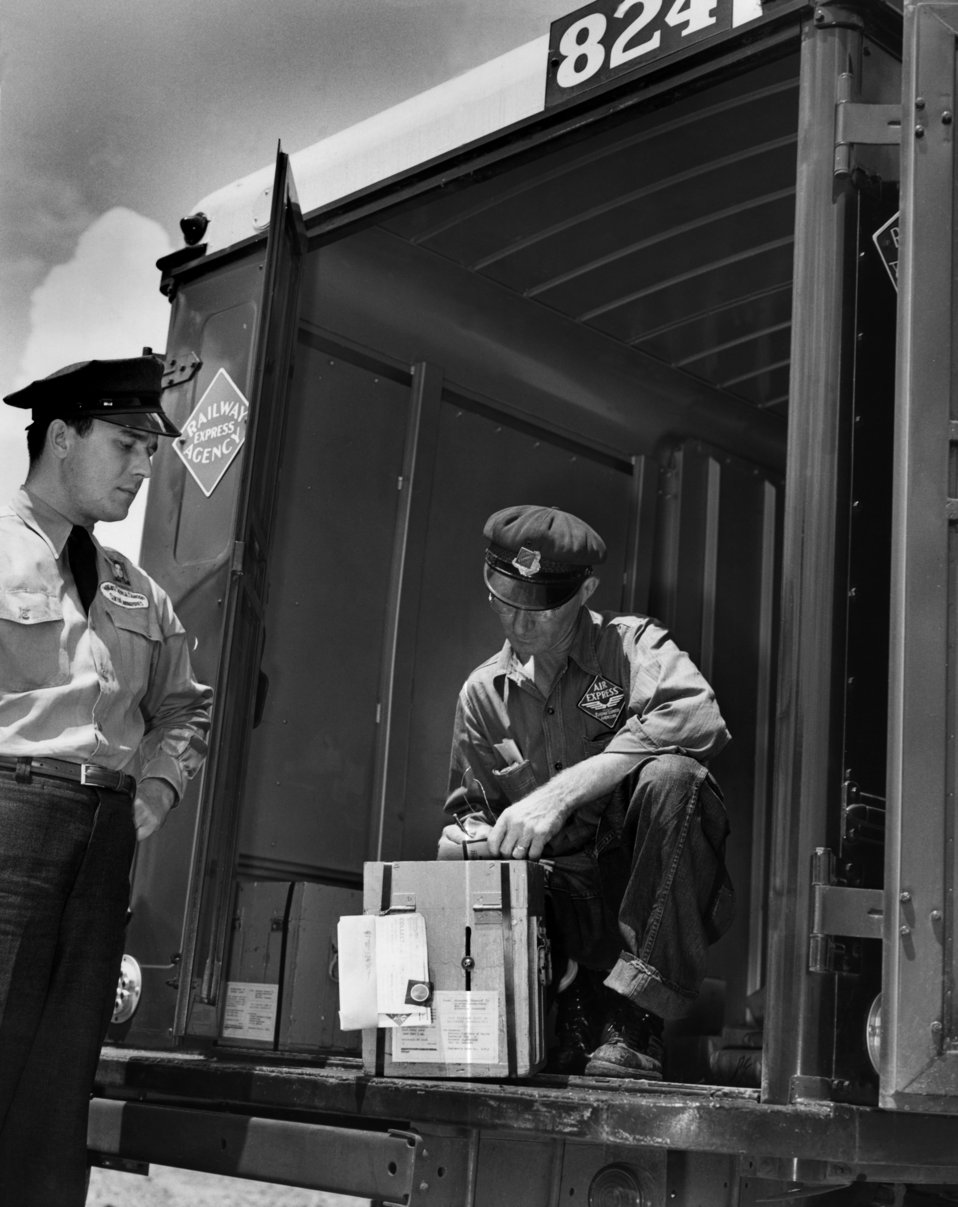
Isotope 1000 th Shipment Oak Ridge

3636-1 DOE photo Ed Westcott 7-9-1947 Oak Ridge Tennessee